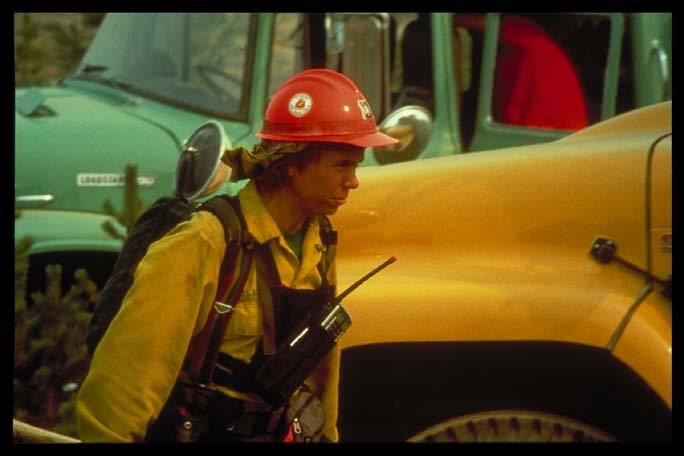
Wildland firefighter